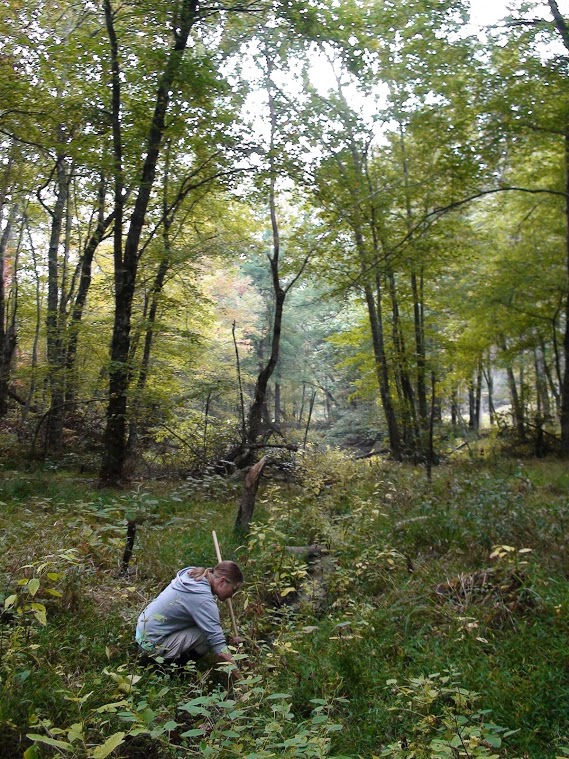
Bog turtle

Scientific name: Clemmys muhlenbergii
Status: Threatened and Similarity of Appearance

Checking the mud for a bog turtle